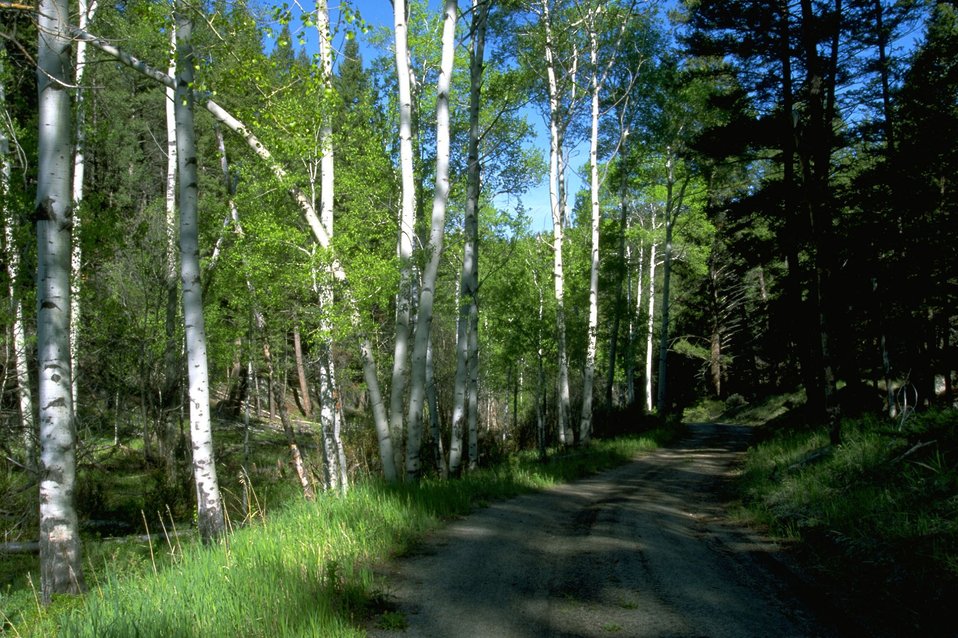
MacLean Road in the shade of Aspen and fir trees